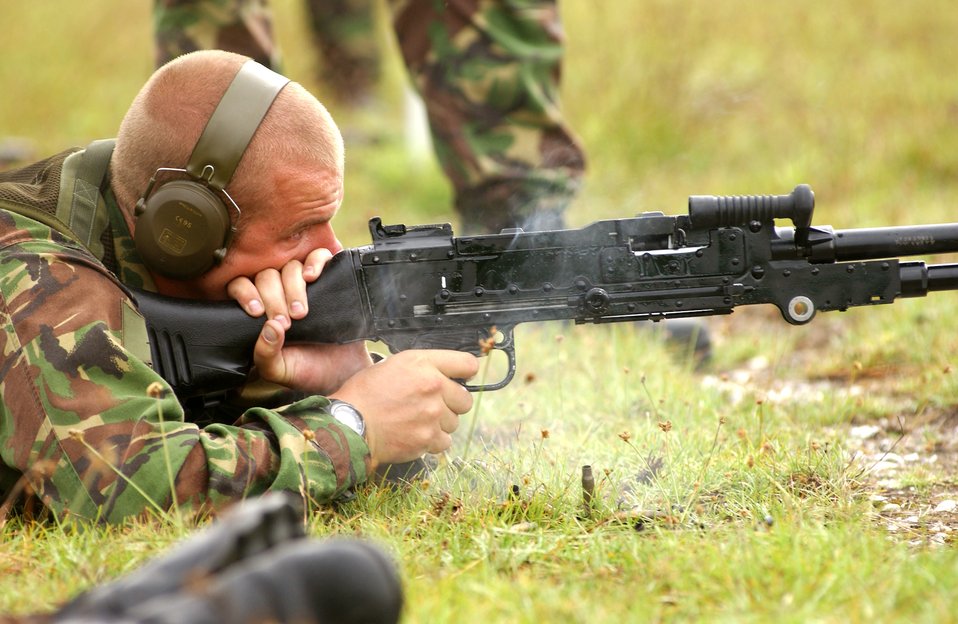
Ready, aim, fire

OPERATION ENDURING FREEDOM -- British royal marine commando Larry Lamb fires a British machine gun during a firepower demonstration June 24 at a forward-deployed location. The demonstration involved the British Royal Marines, and U.S. Air Force security forces and explosive ordnance disposal Airmen deployed with the 40th Air Expeditionary Group.